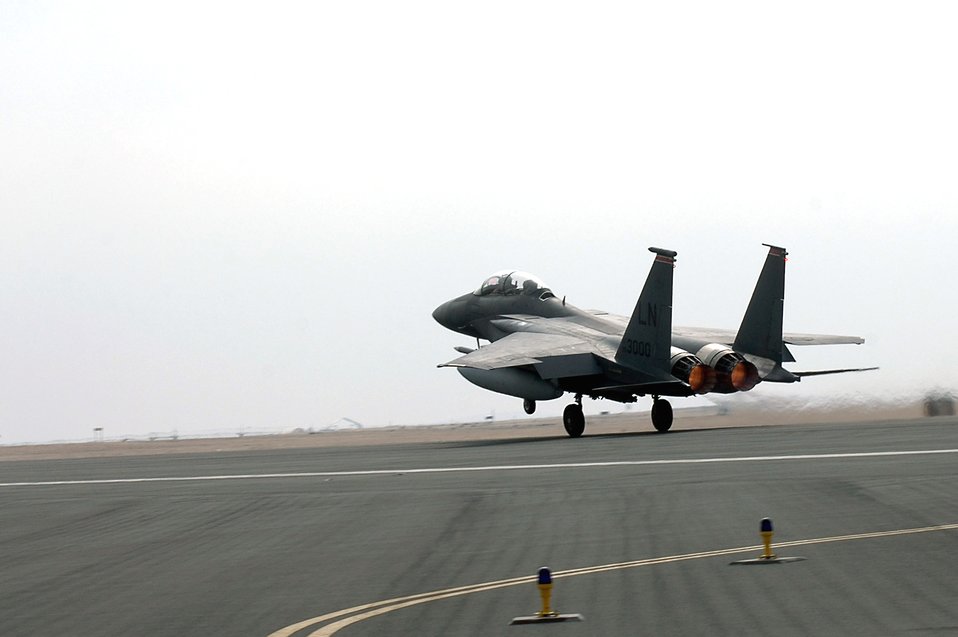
Soaring Eagles

An F-15 Strike Eagle rolls down the runway on takeoff Dec. 11 in Southwest Asia. The F-15s are deployed to the 494th Expeditionary Fighter Squadron in support of Operation Iraqi Freedom. The 494th EFS was the first unit to fly the guided bomb unit 39/B small diameter bomb into combat in October. The new bomb, the first of its kind in the Air Force inventory, gives aircrews the ability to destroy targets that would normally be passed over due to the proximity of friendly troops, civilians, structures or personal property.